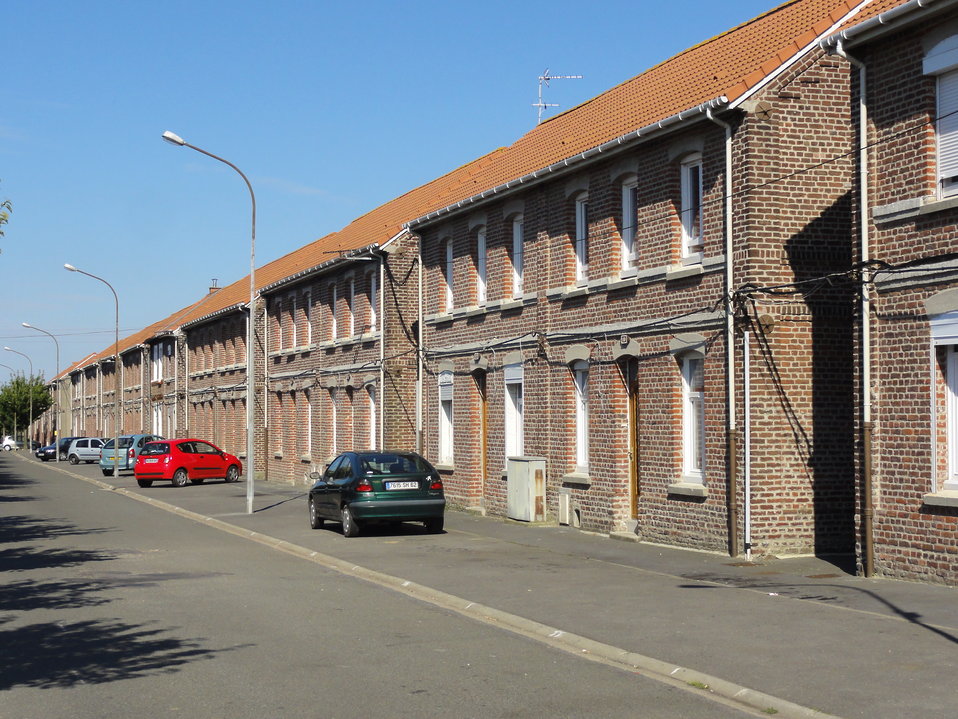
Français : Cités de la Fosse n° 2 bis de la Compagnie des mines de Bruay, Haillicourt, Pas-de-Calais, Nord-Pas-de-Calais, France.